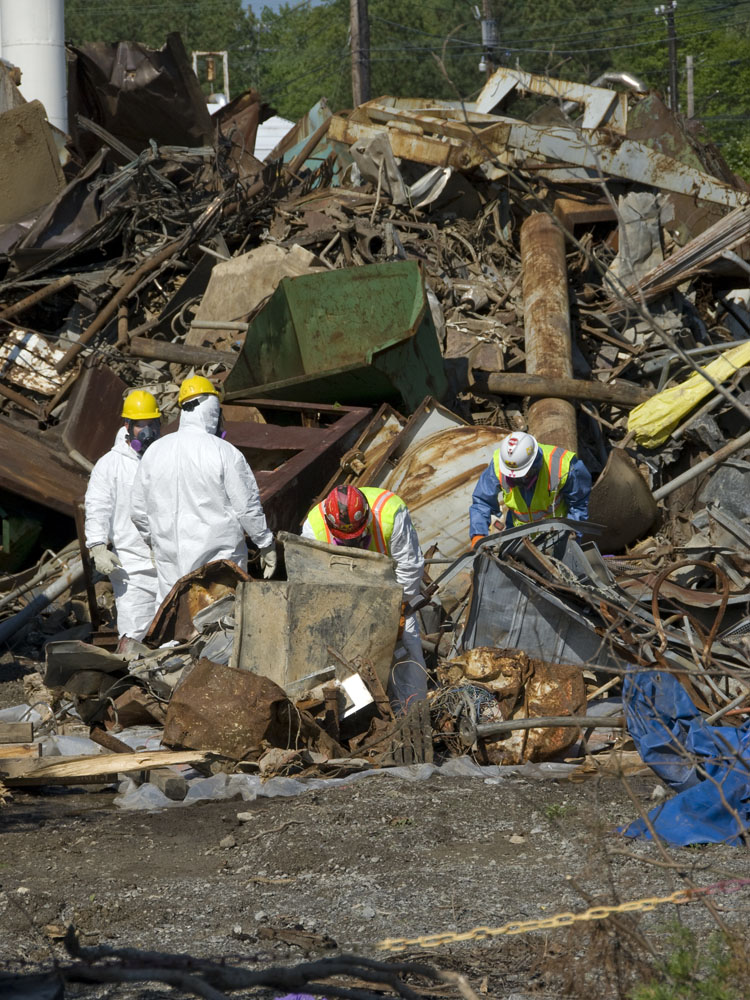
Skilled Workers Bruised by Recession Find New Start in Oak Ridge Recovery Act Work

The Old Salvage Yard project called for cleanup and disposal of 31,000 cubic yards of scrap metal and debris from a seven-acre site. The yard was established in the early 1970s and was essentially an outdoor storage site for scrap metal and liquid wastes. The team used an 'onion peel' layer-by-layer approach for sampling and characterizing the waste to ensure safety and proper disposal.